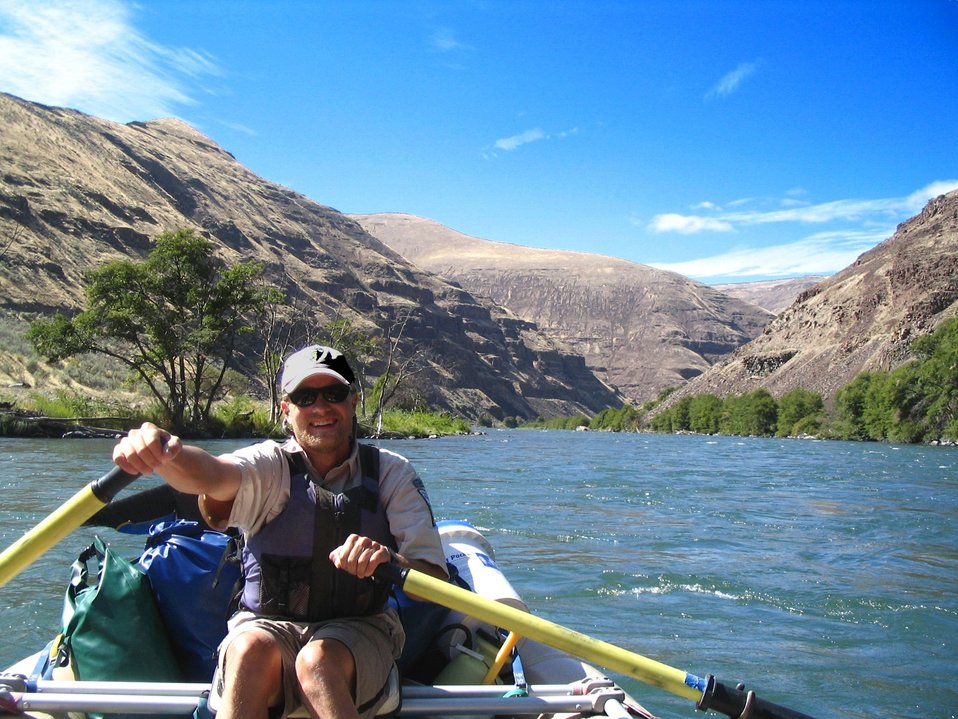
Jim on river patrol on the Lower Deschutes. Steve Storo, Prineville BLM at Work HM